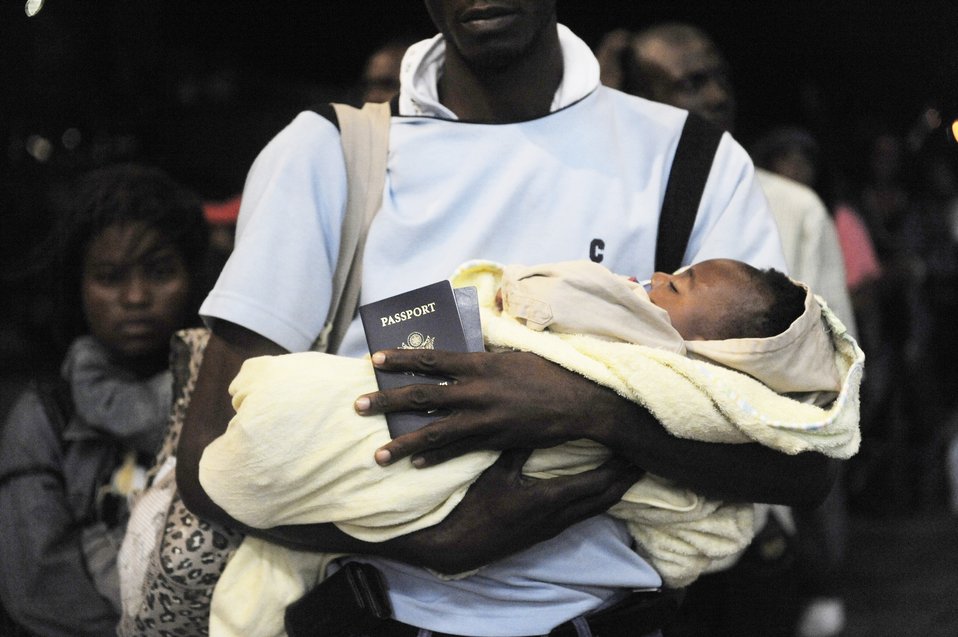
Returning

A U.S. citizen in Haiti holds his child and passport before boarding a C-17 Globemaster III for a flight back to the United States Jan. 20, 2010 at Toussaint L'Ouverture International Airport in Port-au-Prince, Haiti. The U.S. Air Force is flying U.S. citizens in Haiti back to the U.S. following an earthquake Jan. 12 that leveled much of the country's infrastructure.